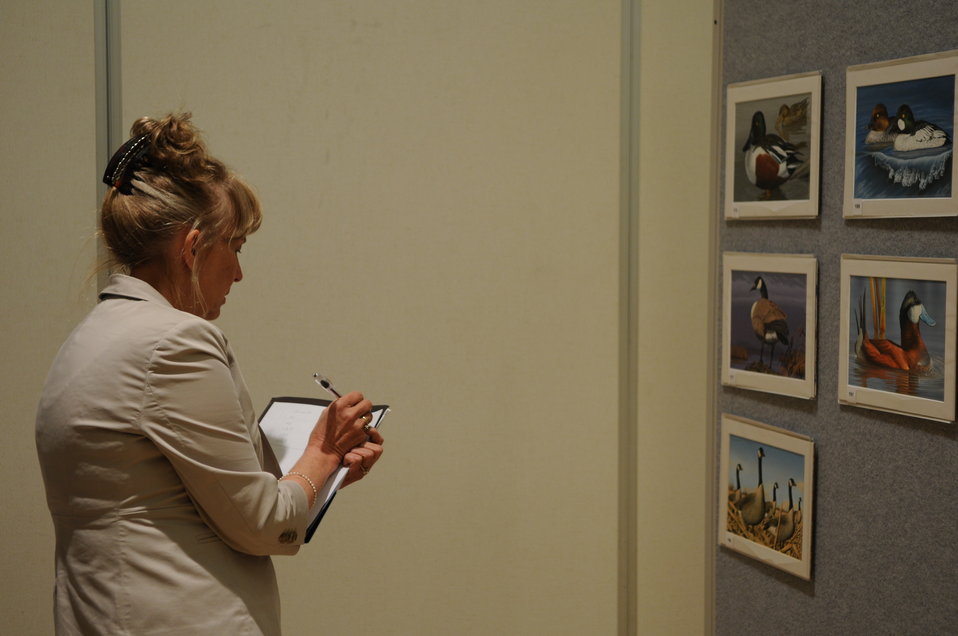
Judging

The U.S. Fish & Wildlife Service sponsored the 2012 Federal Duck Stamp Art Contest September 28 and 29 in Ogden, Utah, at Weber State University. A panel of five judges was responsible for choosing the art work used to design the 2013-2014 Migratory Bird Hunting and Conservation Stamp.